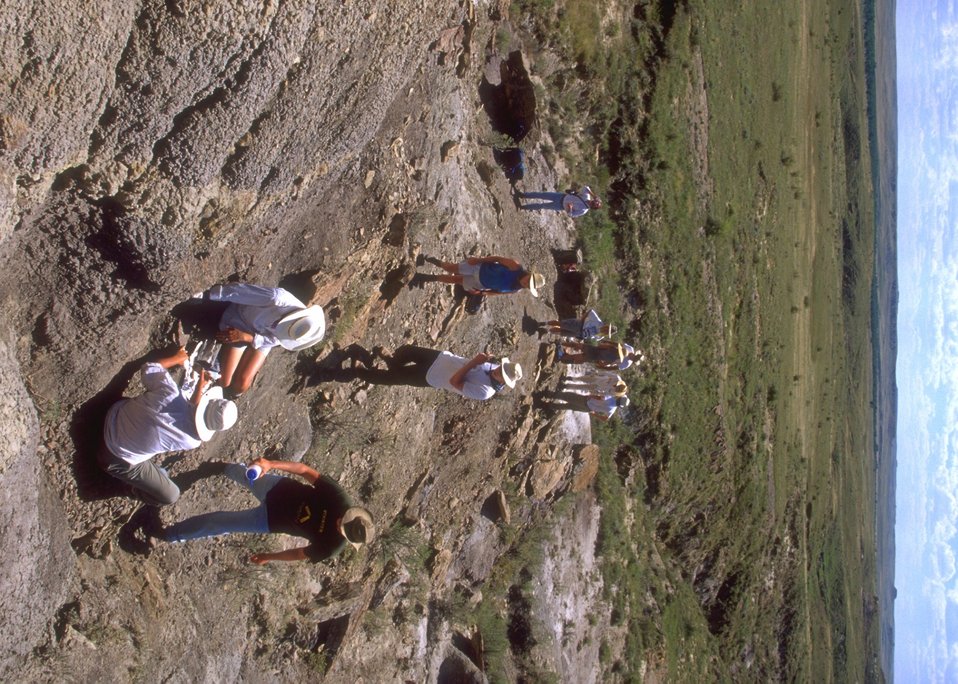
Paleontologist working a dig for dinosaur bones, Lance Creek Fossil Area, Newcastle Field Office.